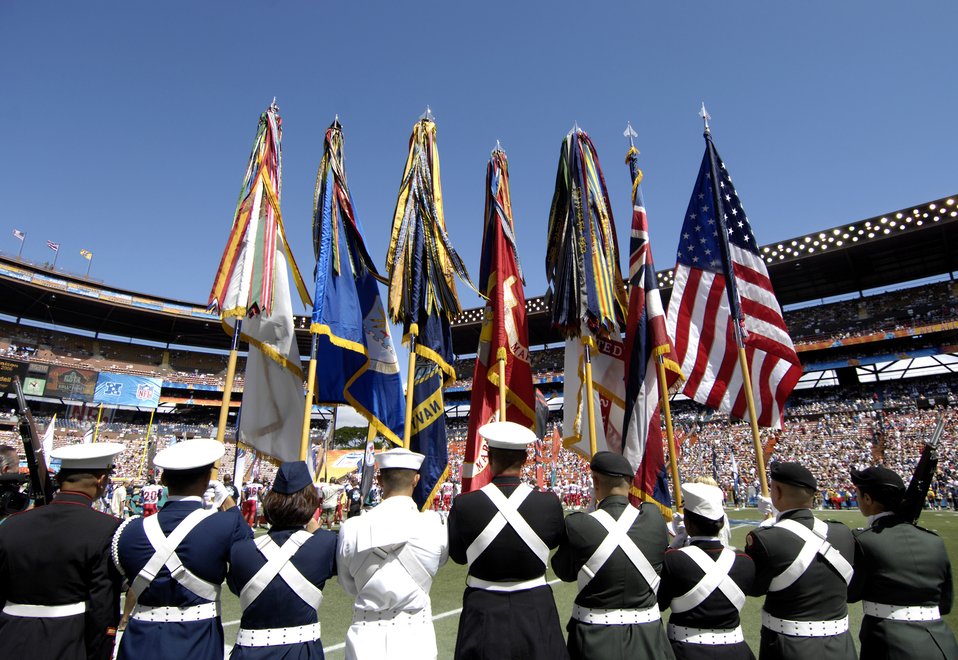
Pro Bowl Airmen

A joint-service honor guard waits to take the field during the opening ceremonies of the 2007 Pro Bowl Feb. 10 at Aloha Stadium in Hawaii. Servicemembers from all branches of the U.S. military in Hawaii participated in Pro Bowl activities. The Pro Bowl brings together the top players in the National Football League.